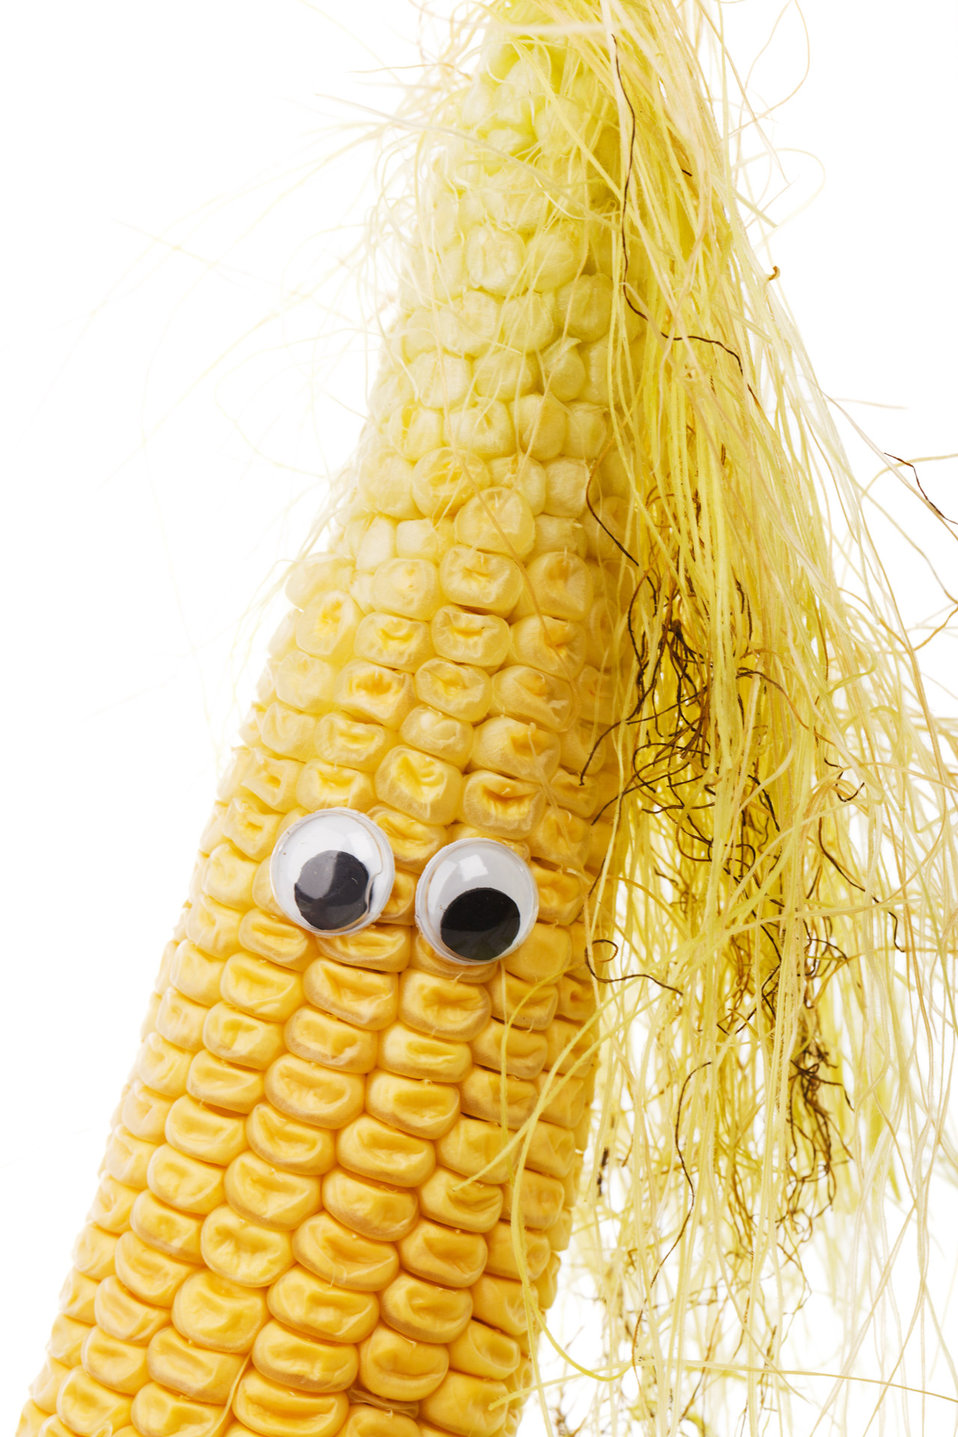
Funny corn face isolated on white background.